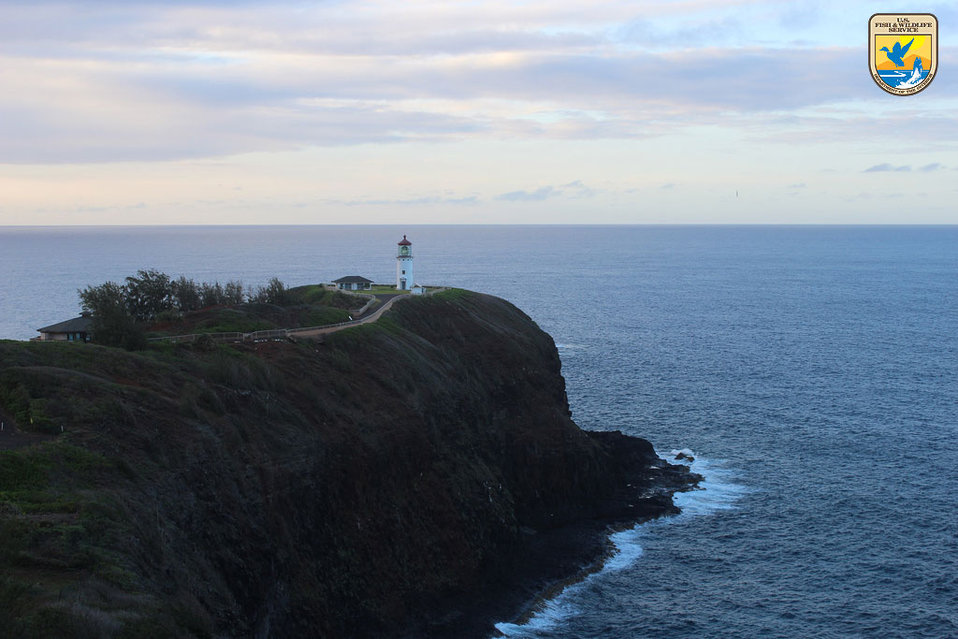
Daniel K. Inouye Kilauea Point Lighthouse - Pacific Region

The Daniel K. Inouye Kilauea Point Lighthouse as the sun sets on it's 100th birthday.